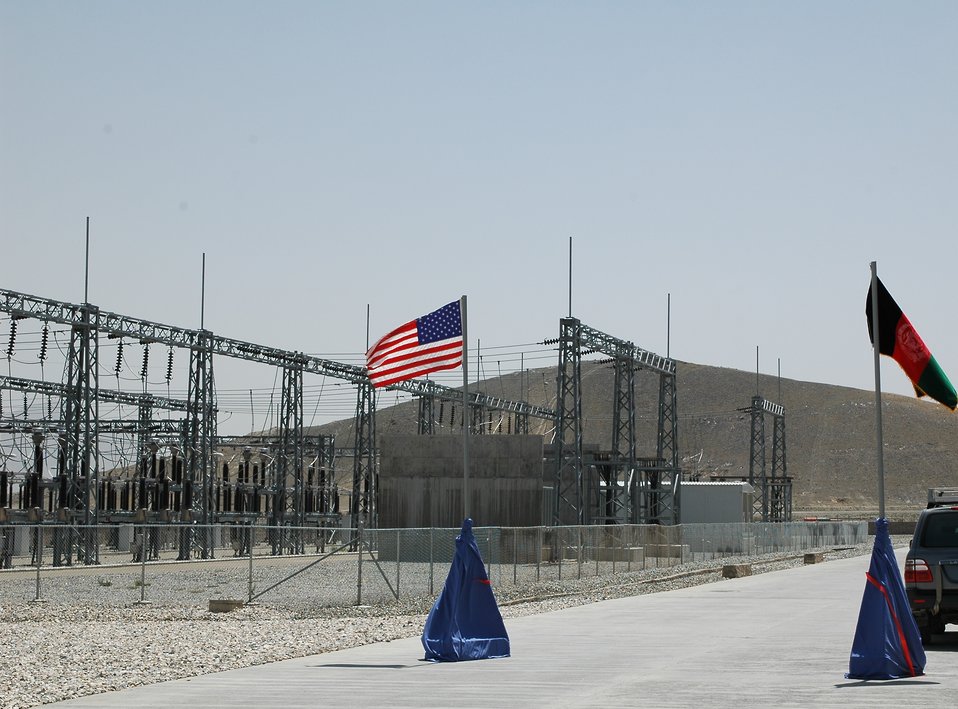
105 MW Tarakhil Power Plant Handover